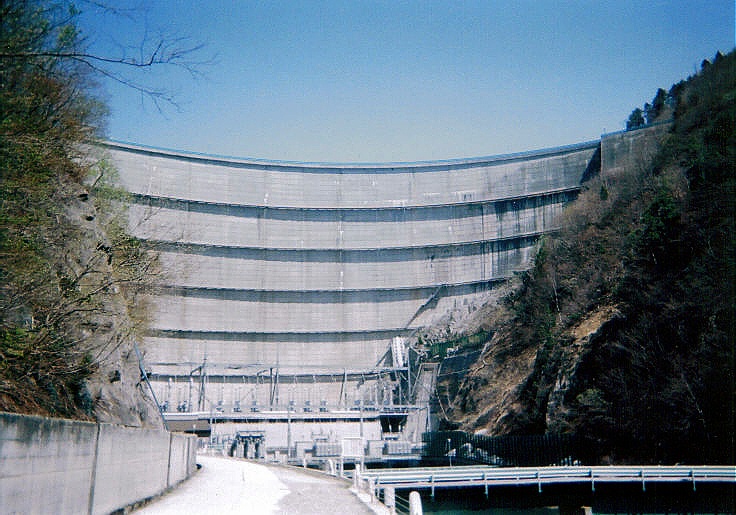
Dam